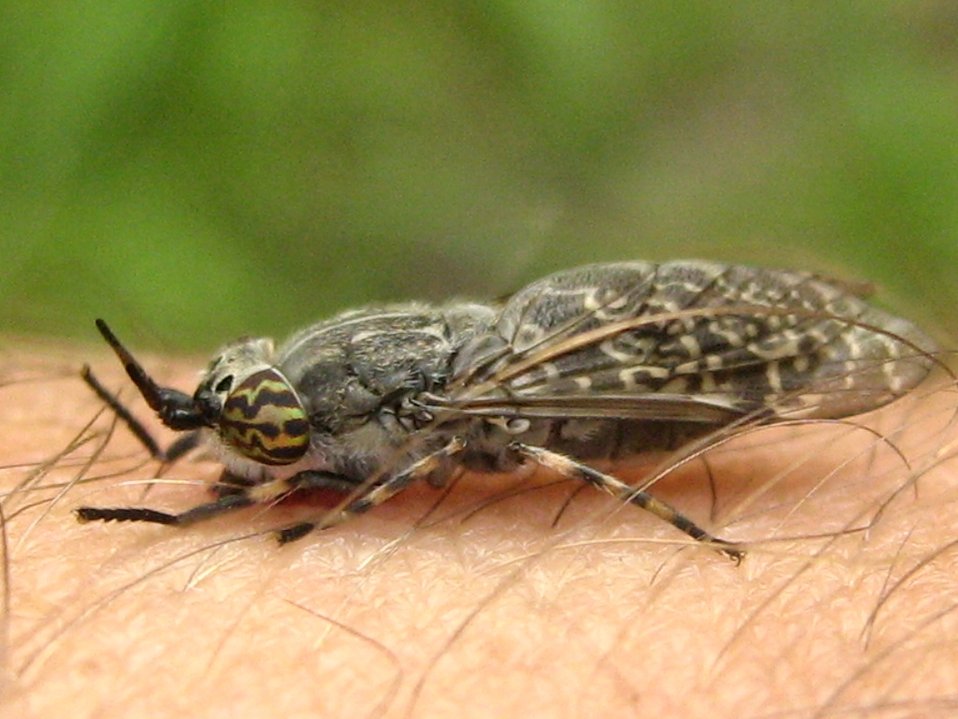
Deutsch: Haematopota pluvialis, die „Regenbremse“ oder „Blinde Fliege“. Früher wurde sie wiss. Chrysozona pluvialis L. genannt. Fotografiert in einem Wald bei Nauen (Brandenburg)